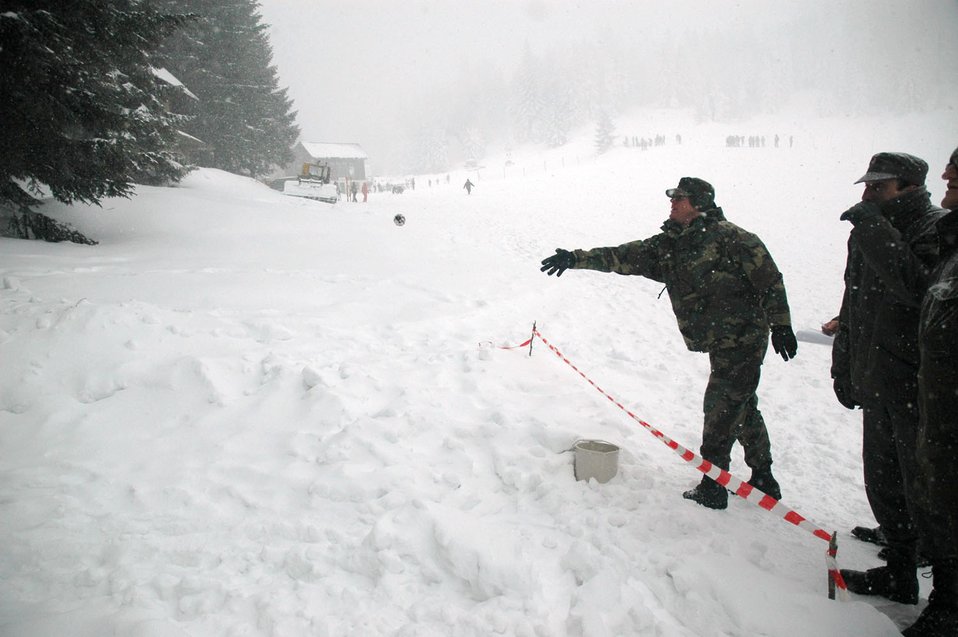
Let the games begin

TUZLA AIR BASE, Bosnia and Herzegovina (AFPN) -- Lt. Col. David Lowe throws a dummy hand grenade during Operation Winter Games. Colonel Lowe is commander of Detachment 1, 401st Air Expeditionary Wing.